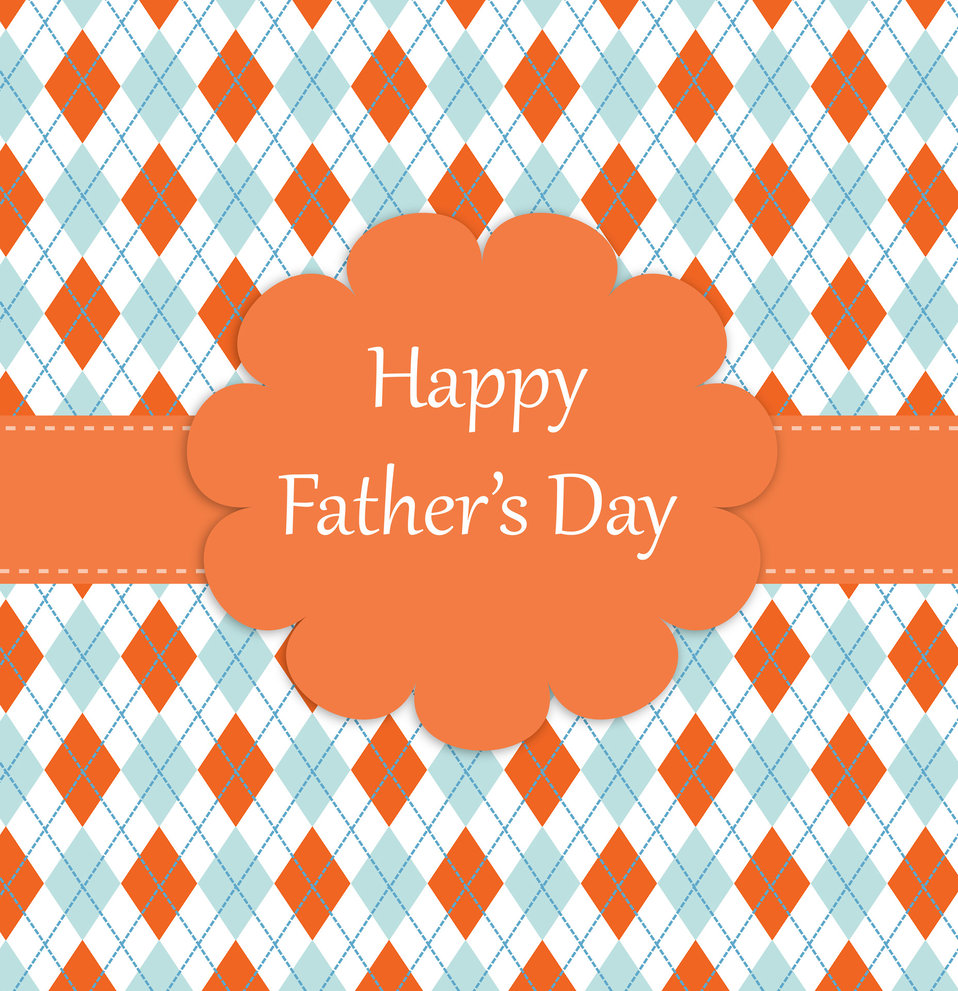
Father's day argyle pattern card

Blue and orange argyle pattern happy father's day card.